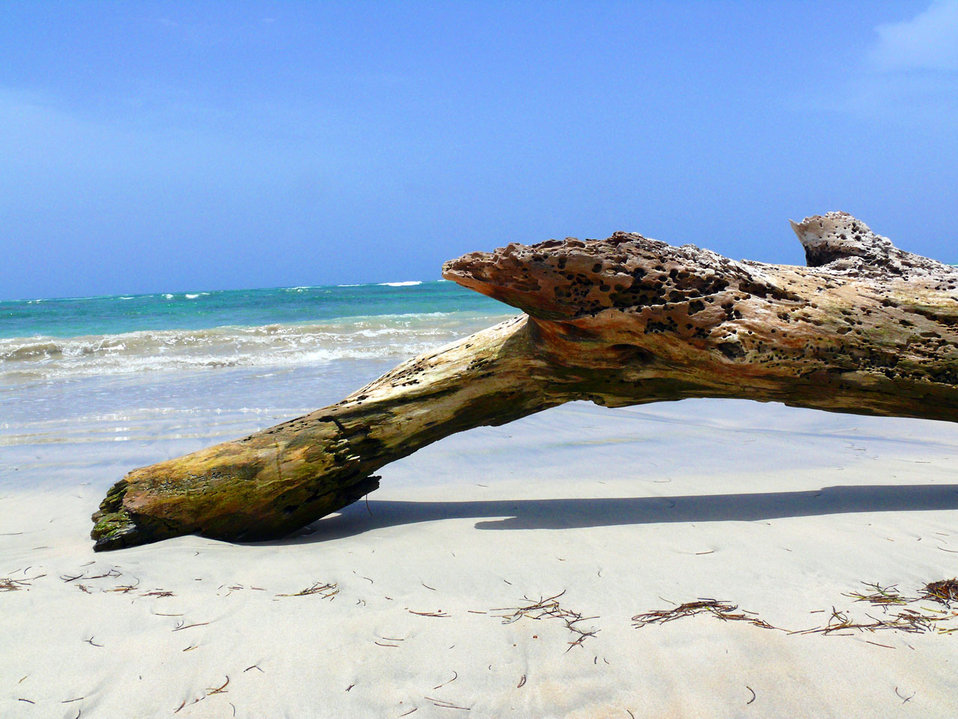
Wood on the beach.